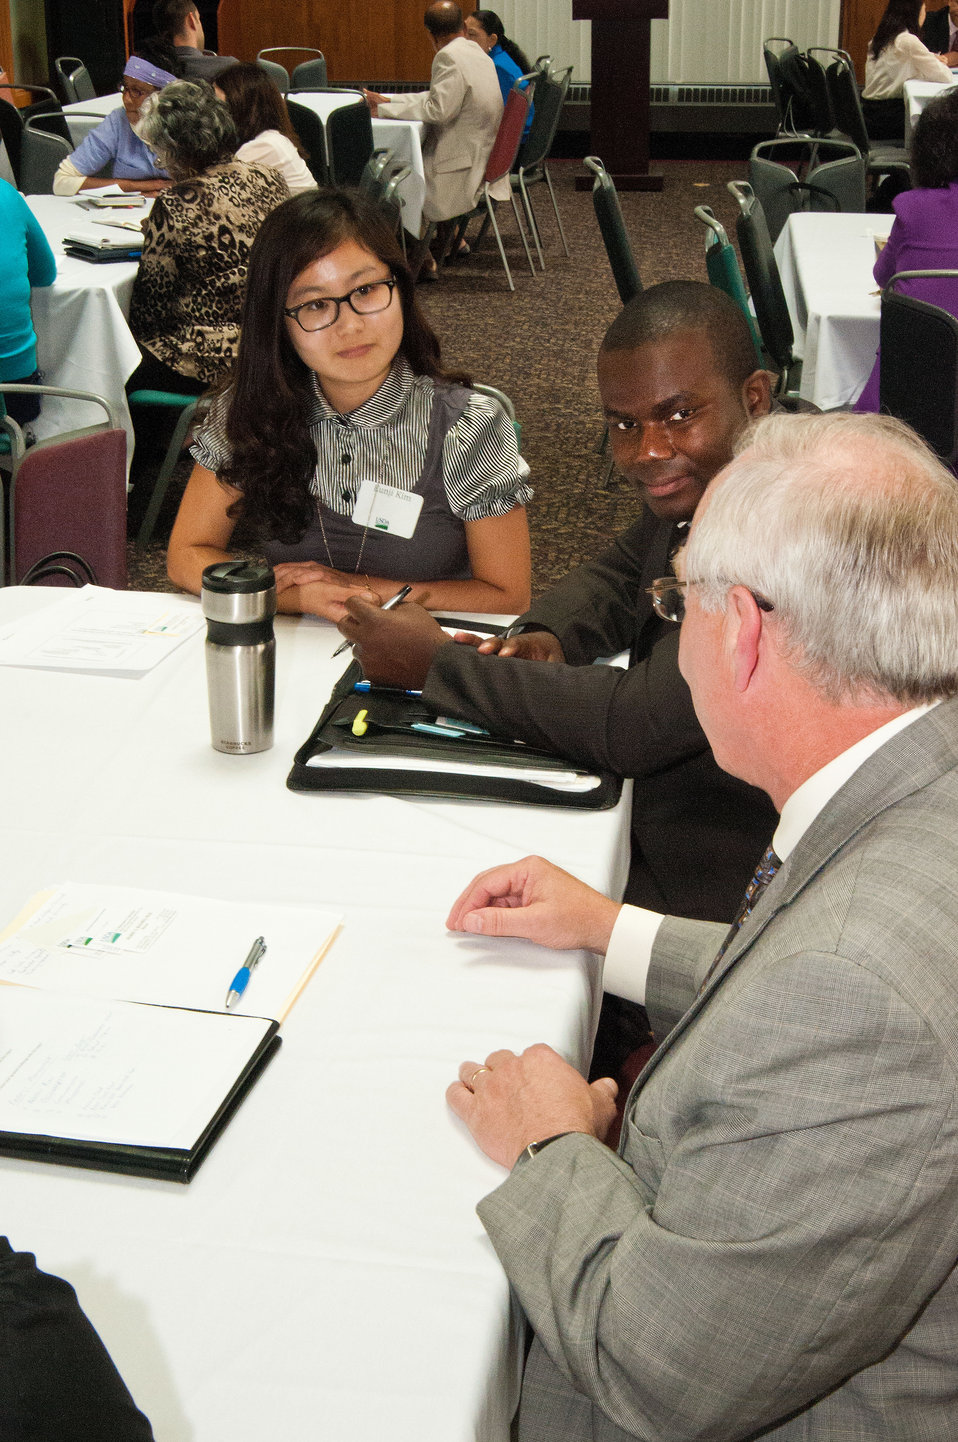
(L to R) U.S. Department of Agriculture (USDA) Office of General Counsel (OGC) Eunji Kim, Noah Waters and Dr. Harry Baumes discuss “Project Management” at USDA’s Office of Human Resources Management (OHRM) Virtual University’s Fall Flash Mentoring Event at USDA in Washington, D.C. on Thursday, Sept. 6, 2012 in Washington, DC.